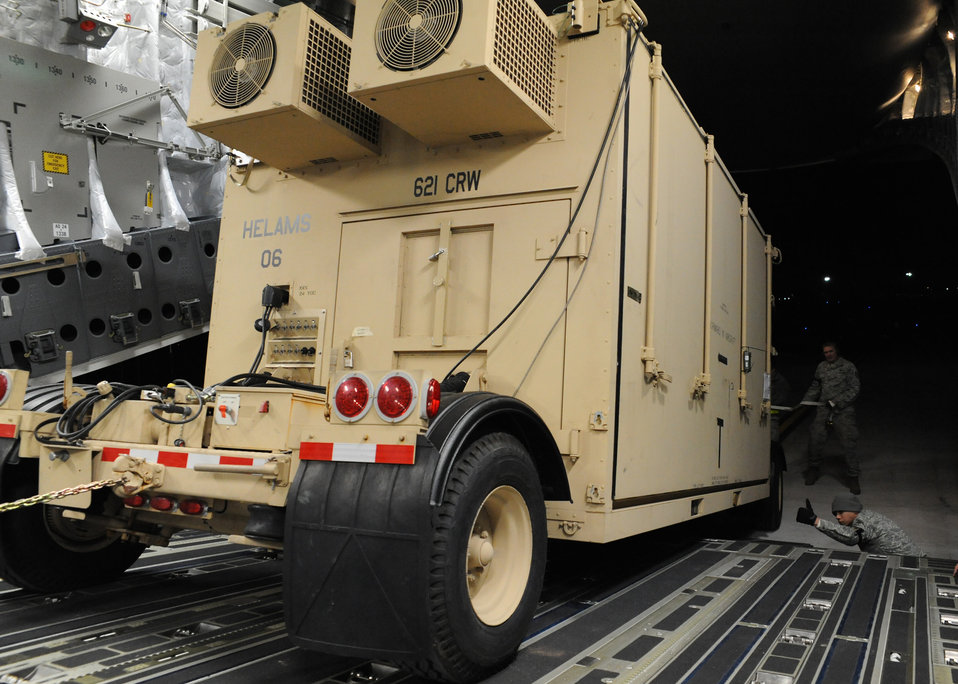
Haiti Humanitarian Effort

A mobile command and control communications center is loaded onto a Charleston AFB C-17 at Joint Base McGuire-Dix-Lakehurst, New Jersey, Jan. 15, 2010. The 621st Contingency Response Wing at JB MDL deployed ground forces to set up air base operations to set the stage for expedient supply of humanitarian aid. Additionally, AMC has aeromedical assets that can take care of and transport injured people to follow-on care. (U.S.Air Force photo/Senior Airman Katie Gieratz)